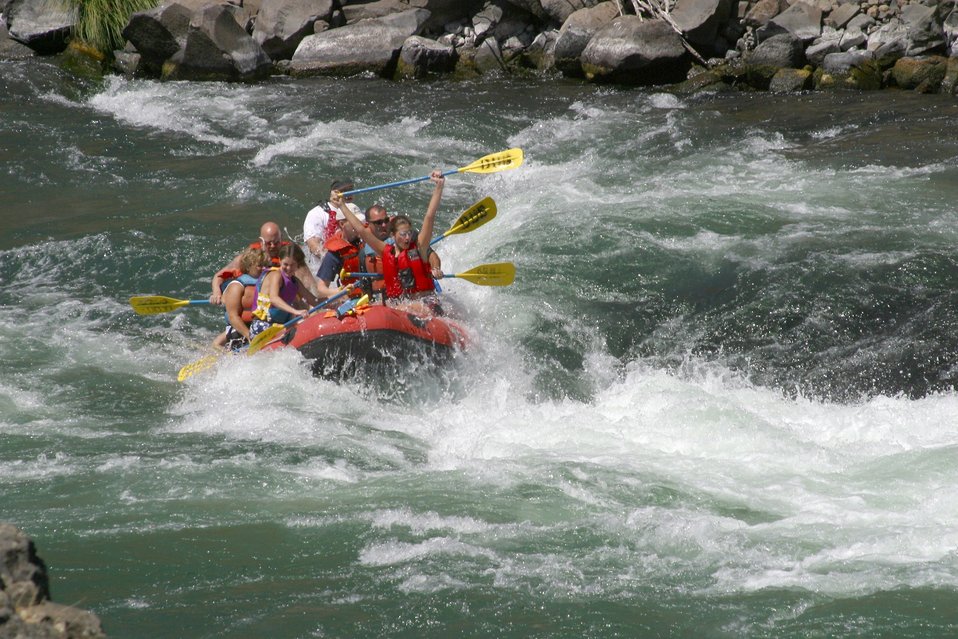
Boxcar Rapids class III, has large waves with a small drop that form turbulent currents. 7/26/03 Pelton Dam 3600 cfs: Moody Rapids 4300 cfs.